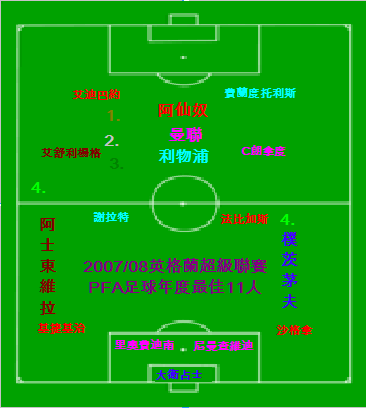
中文: 2007－08年英超PFA年度最佳11人